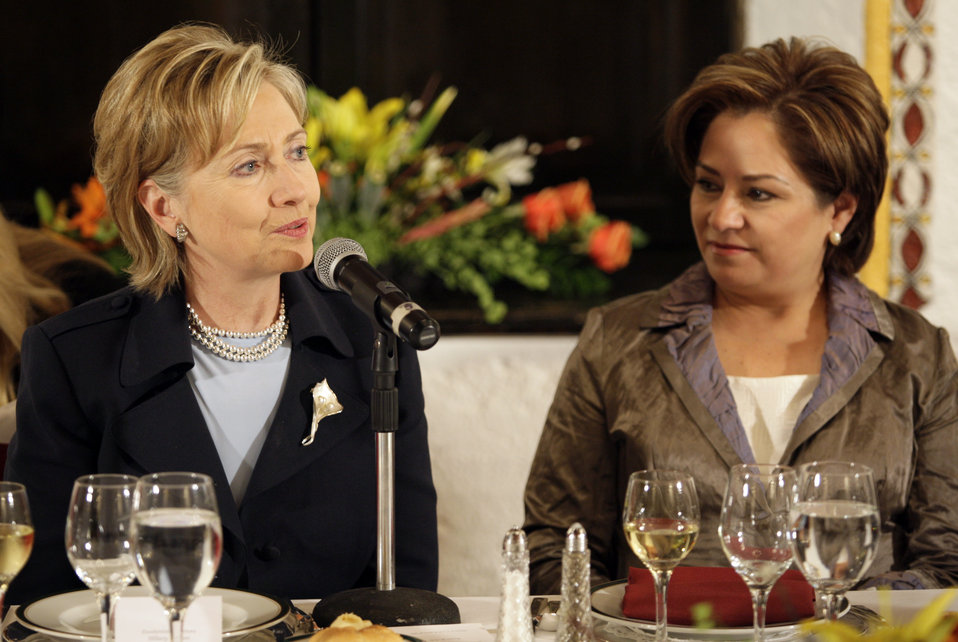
Secretary Clinton Attends Women Leaders Dinner

U.S. Secretary of State Hillary Rodham Clinton attends a dinner for women leaders hosted by Secretary of Foreign Affairs Patricia Espinosa, Mexico City, March 25, 2009.